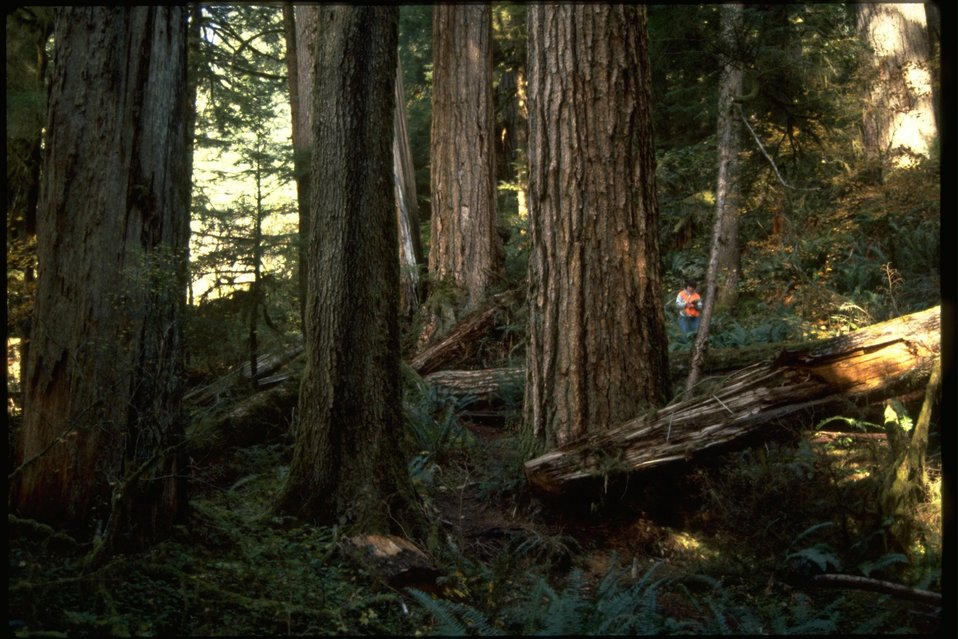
Valley of the Giants with a person in the background.